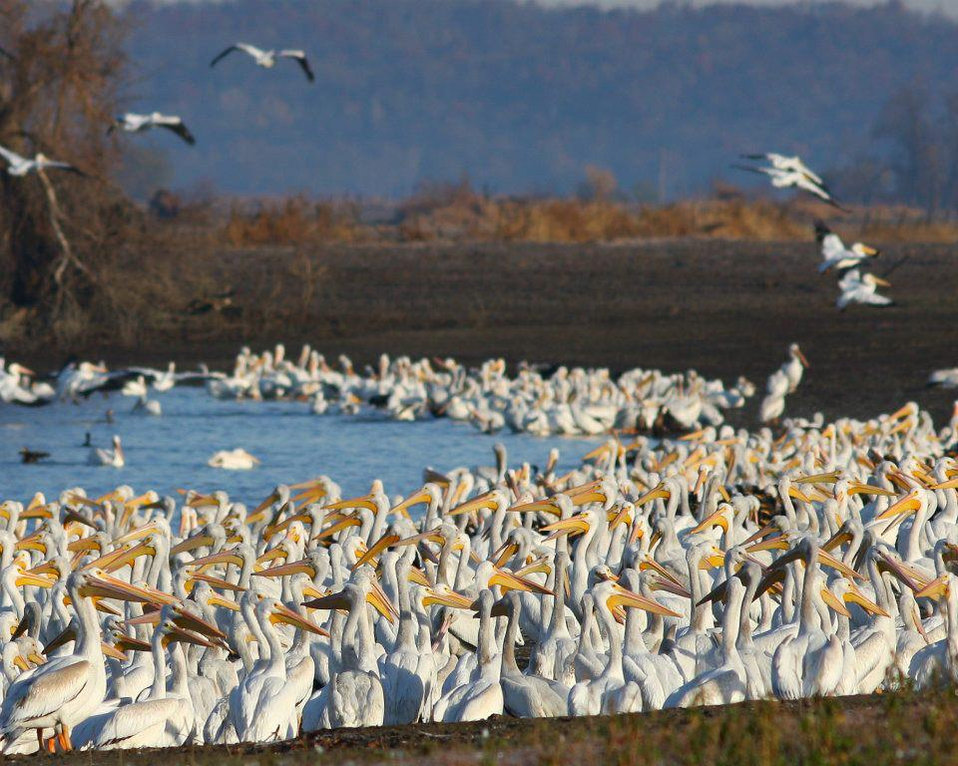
White pelicans staging at Squaw Creek NWR

Squaw Creek National Wildlife Refuge, MO
Nov. 2011